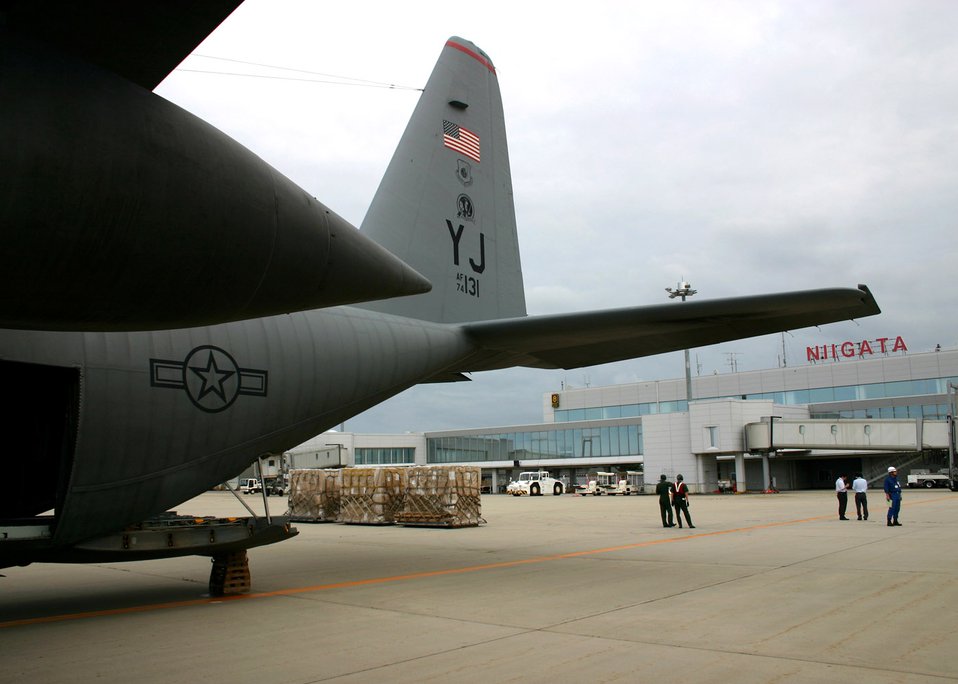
Yokota Airmen aid Japan after earthquake

A C-130 Hercules from the 36th Airlift Squadron transported 10,000 pounds of water and 100 air-conditioning units to the Niigata Airport July 18 from Yokota Air Base, Japan. Airmen from the 374th Airlift Wing provided support to Japan after an earthquake hit one of Japan's largest city on the Sea of Japan.